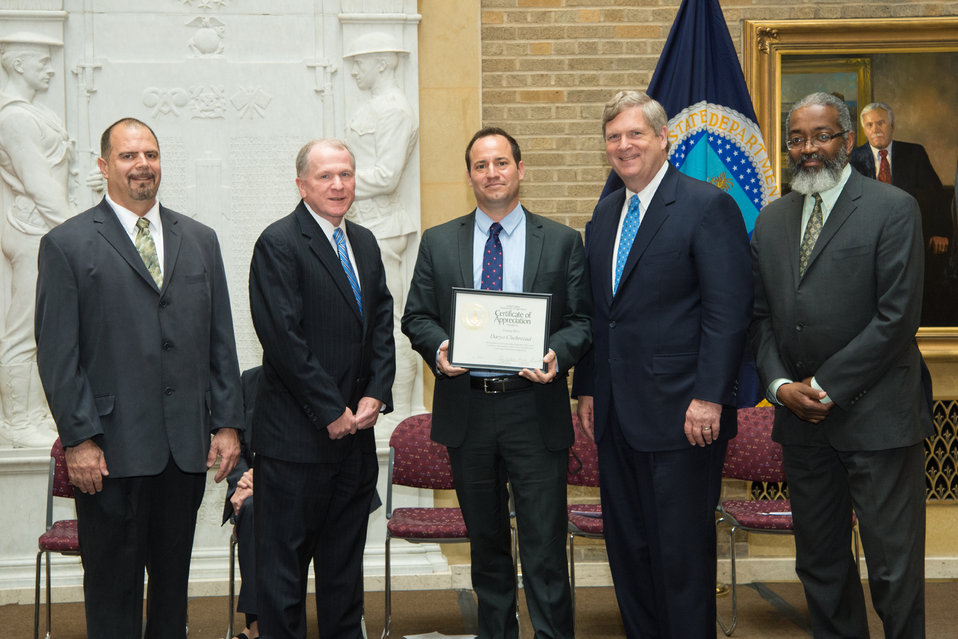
U.S. Department of Agriculture (USDA) Animal and Plant and Health Inspection Service (APHIS) Mexico Darya Chehrezad receives the Unsung Hero Award from USDA’s Organization of Professional Employees President (OPEDA) Louis Iacoletti, USDA Agricultural Marketing Service (AMS) Deputy Administrator Chuck Parrot, Agriculture Secretary Tom Vilsack and USDA Assistant Secretary for Administration Dr. Gregory Parham at USDA in Washington, D.C. on Wednesday, May 7, 2014.